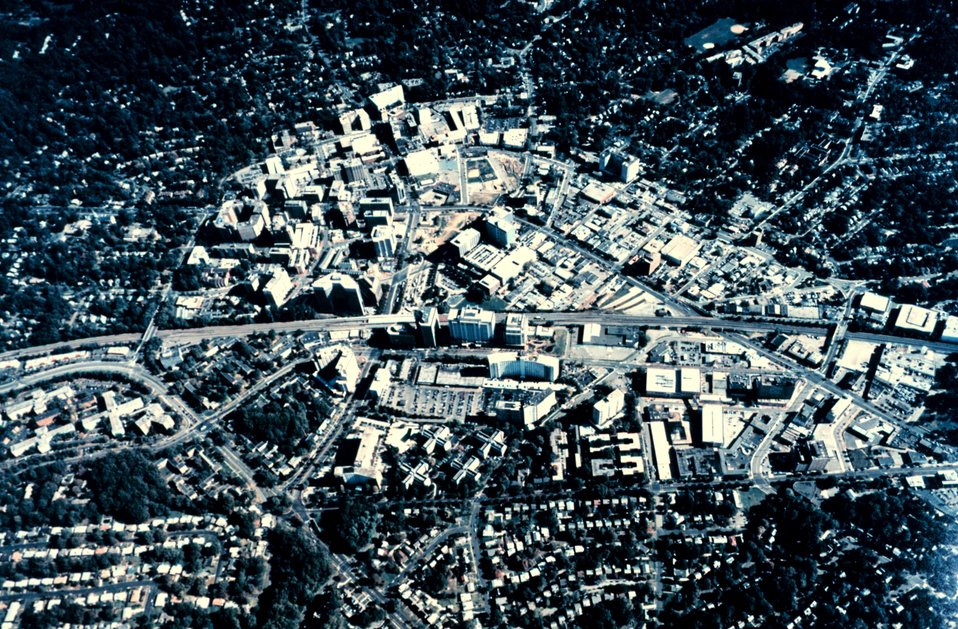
NOAA Headquarters in Silver Spring, Maryland. The NOAA Central Library is in the large rectangular building in the center of the photograph.